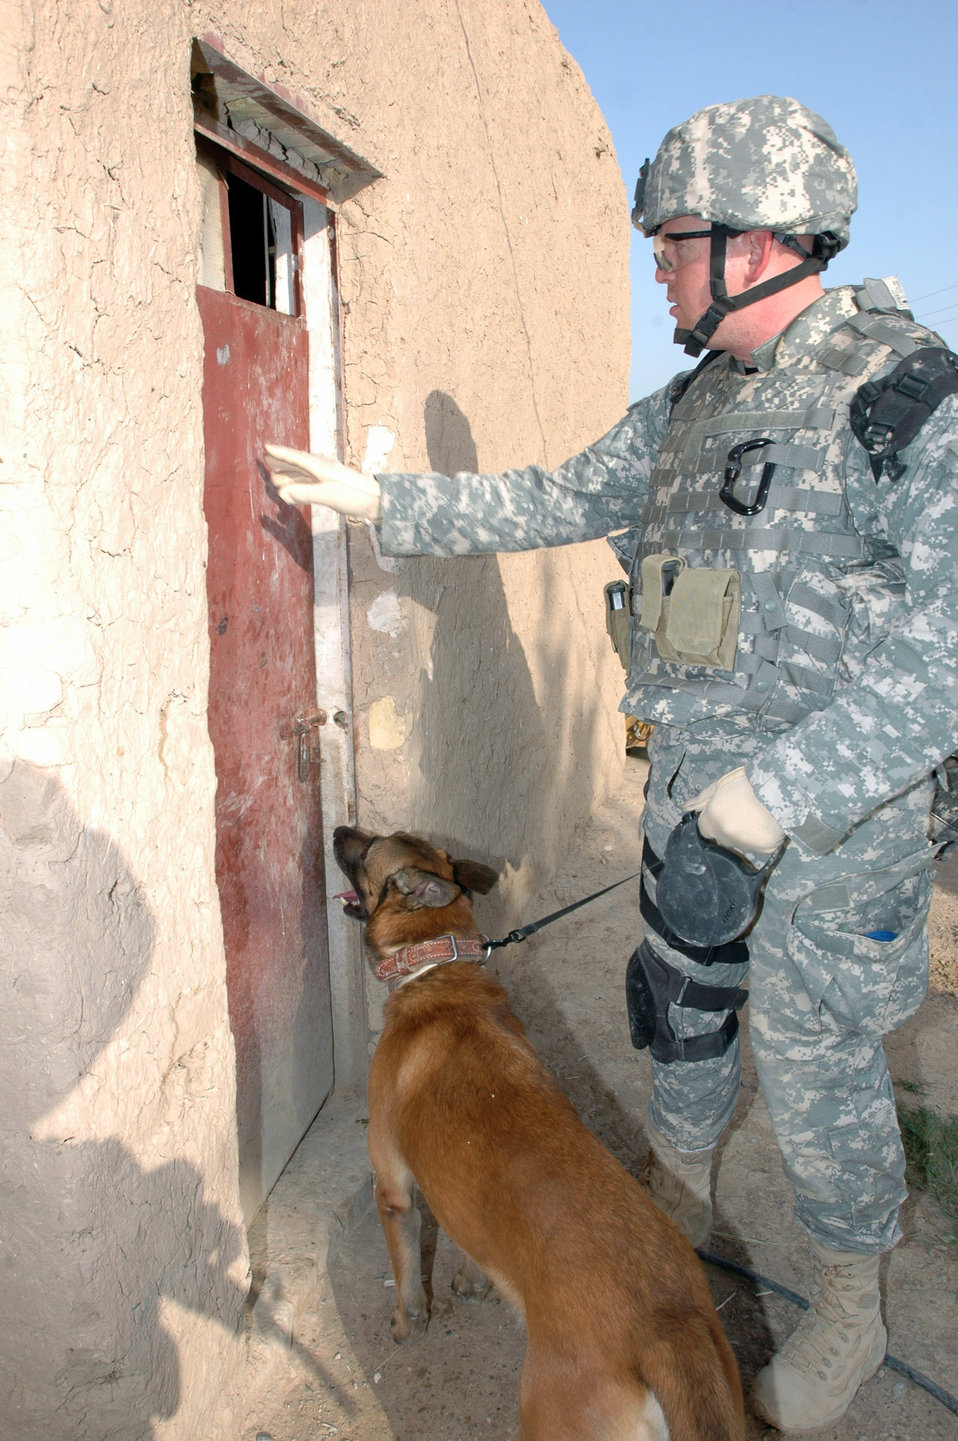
Working dogs bring bite to the fight

Staff Sgt. Dennis Browning, a military working dog handler, and King, an explosives and patrol attack dog, prepare to enter and search a building during a clearing operation near Khan Bani Sa'ad, about 15 miles south of Baqouba, Iraq. Sergeant Browning is deployed from the 21st Security Forces Squadron at Peterson Air Force Base, Colo.